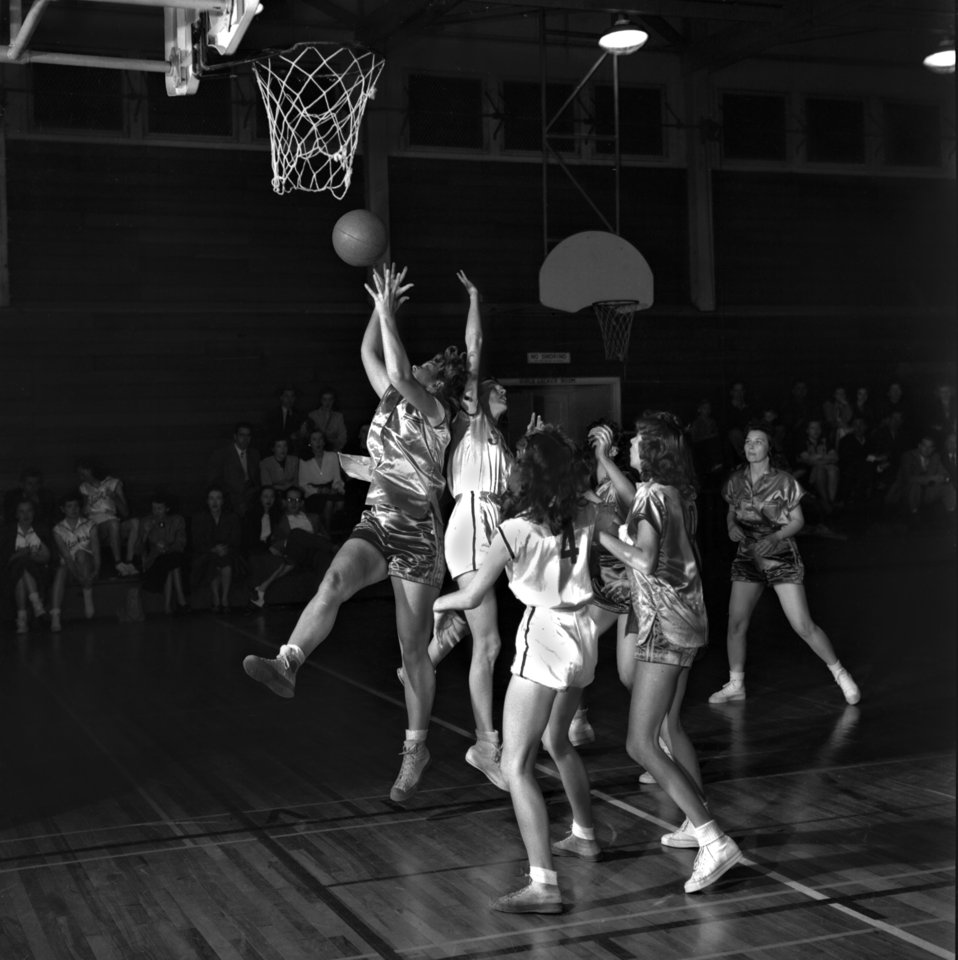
Women's Basketball Monsanto Vs. Maryville

4221a Oak Ridge Tennessee 1-3-1948 DOE photo by Ed Westcott